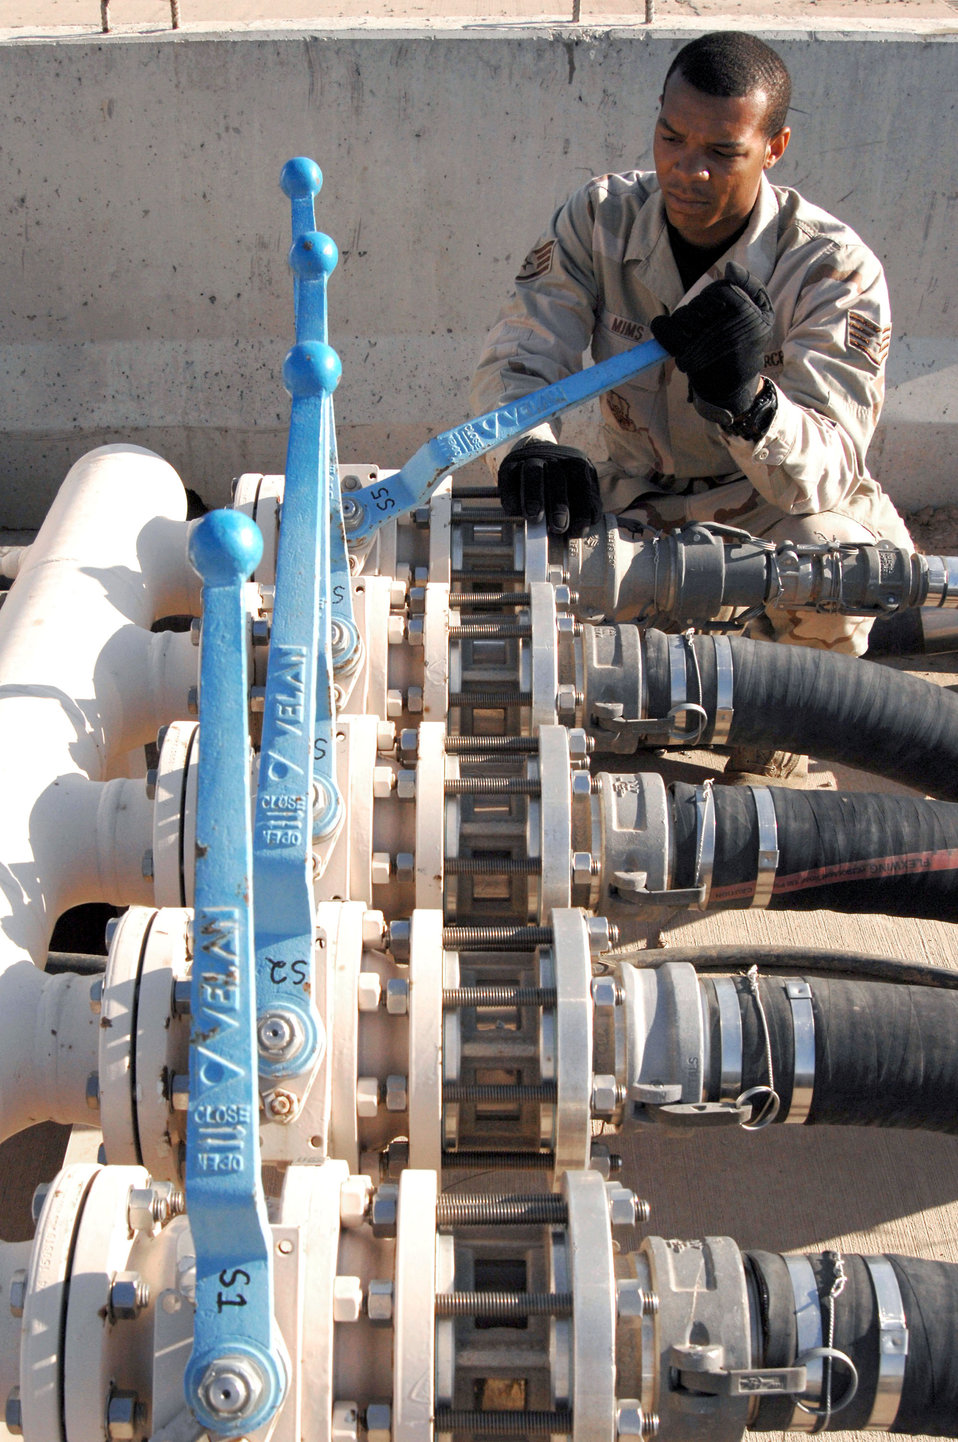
Keepin' the fuel flowin' in Kirkuk

Staff Sgt. Edward Mims opens the recirculation valve to a skid fuel receiver April 5 at Kirkuk Air Base in Iraq. Sergeant Mims is a fuels supervisor with the 506th Expeditionary Logistics Readiness Squadron.